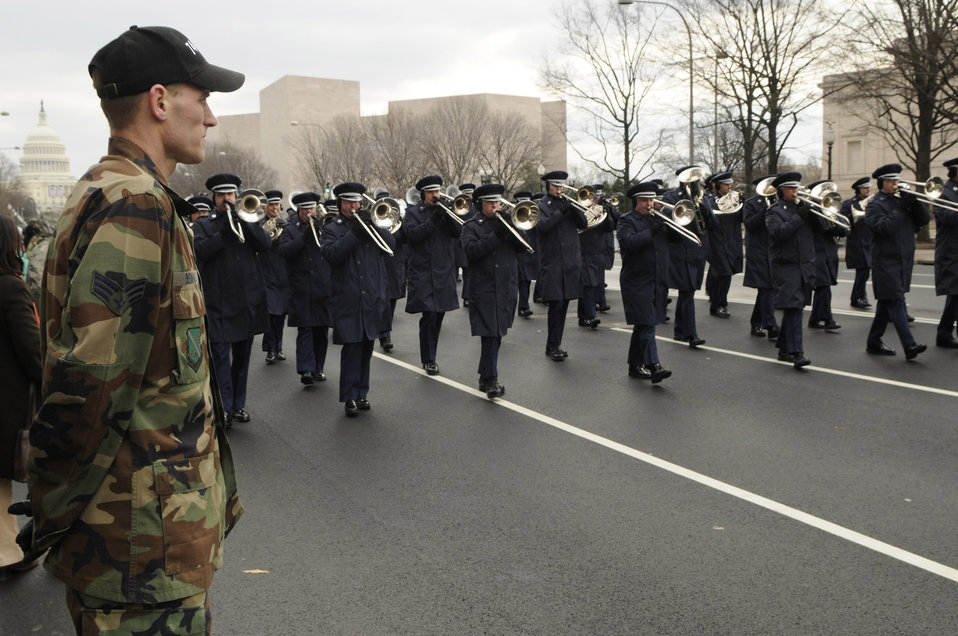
Practice makes perfect

Senior Airman Gregory Benhase stands at parade rest as the Air Force Band's Ceremonial Brass marches by during a practice run of the inauguration parade for President-elect Barack Obama Jan. 11 in Washington, D.C. Airman Benhase is assigned to the 844th Communications Group.